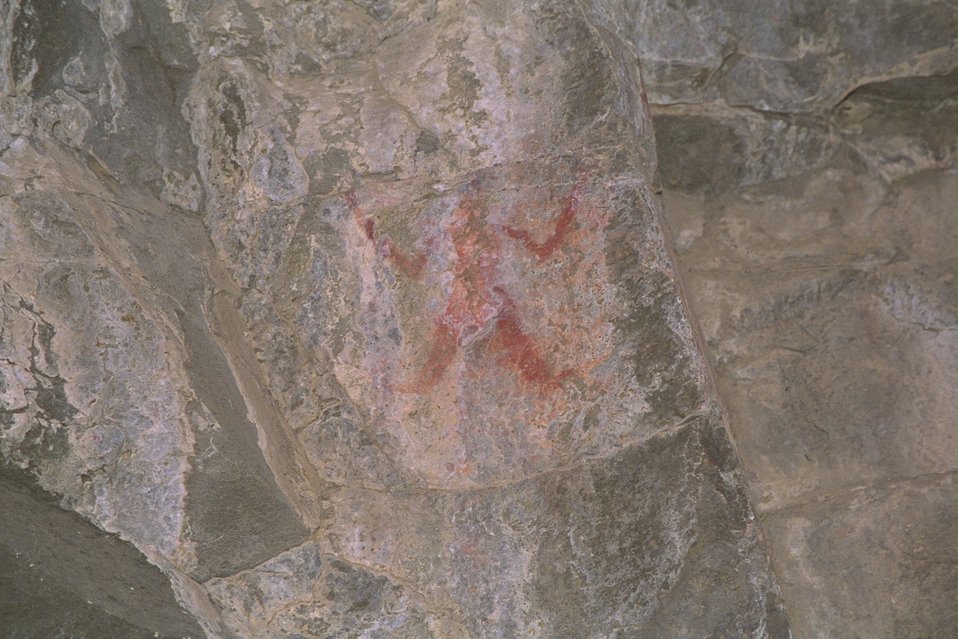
Rock paintings near the takeout at the end of section 2 in the John Day River.